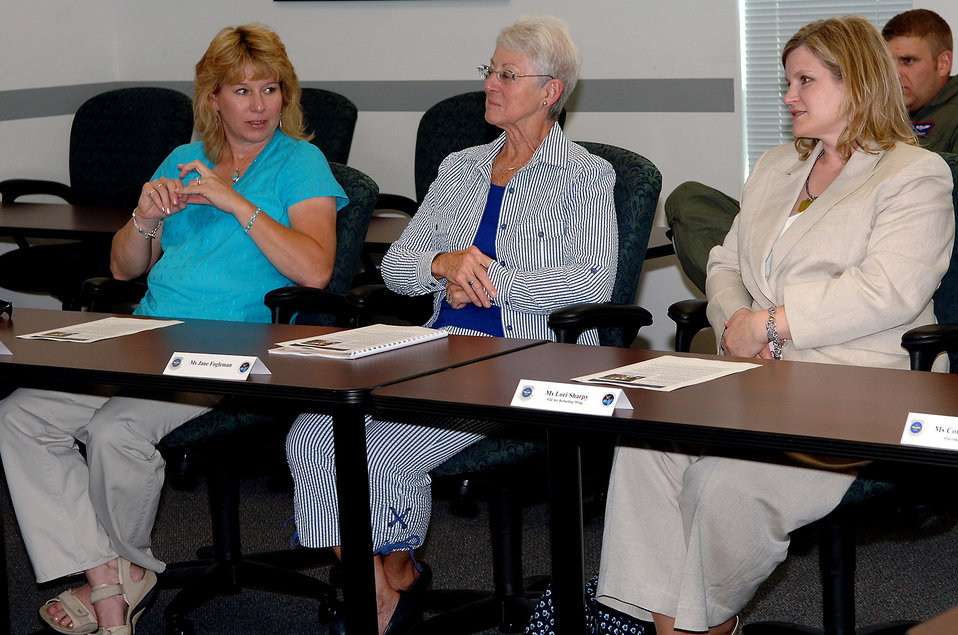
Gen. Fogleman visits Fairchild, praises AMC

Diane White, Miss Jane Fogleman and Lori Sharpy visit the Airman and Family Readiness Center July 24 at Fairchild Air Force Base, Wash. Miss Jane visited the base with her husband, retired Gen. Ronald R. Fogleman, former Air Force chief of staff, who spoke at the 92nd Air Refueling Wing's 60th Anniversary Speakers Symposium.